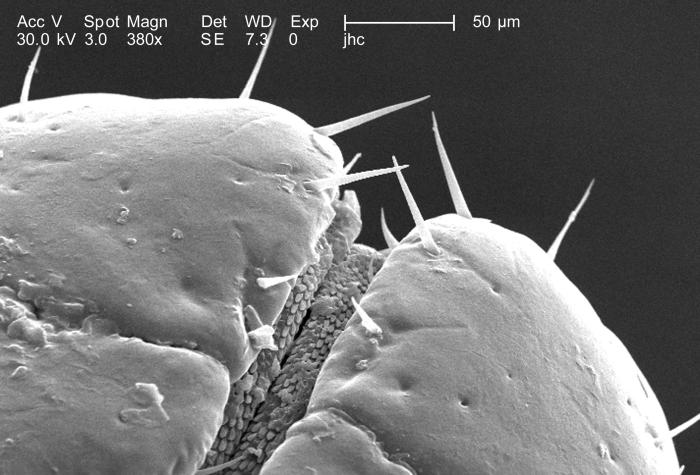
Under a magnification of 380X, approximately 4 times greater than PHIL 9962, this scanning electron micrograph (SEM) depicted a dorsal view of an unidentified male Dermacentor sp. tick found upon a cat in the suburbs of Decatur, Georgia, which measured approximately 3.5mm from its gnathosoma (i.e., capitulum), which is where its mouthparts are located, to the distal abdominal margin (PHIL 9961). Note in PHIL 9959 and 9960, that the entire dorsum of this tick's abdomen is covered by its tough 'scutum', or 'shield', categorizing it as a male. In female Ixodid-species ticks, the scutum only partially covers the dorsal abdomen. Seen clearly in this image is the tick's pedipalps, between which is located its skin-piercing hypostome and chelicerae. Note PHIL 9964 for an additional view of this region under a greater magnification.